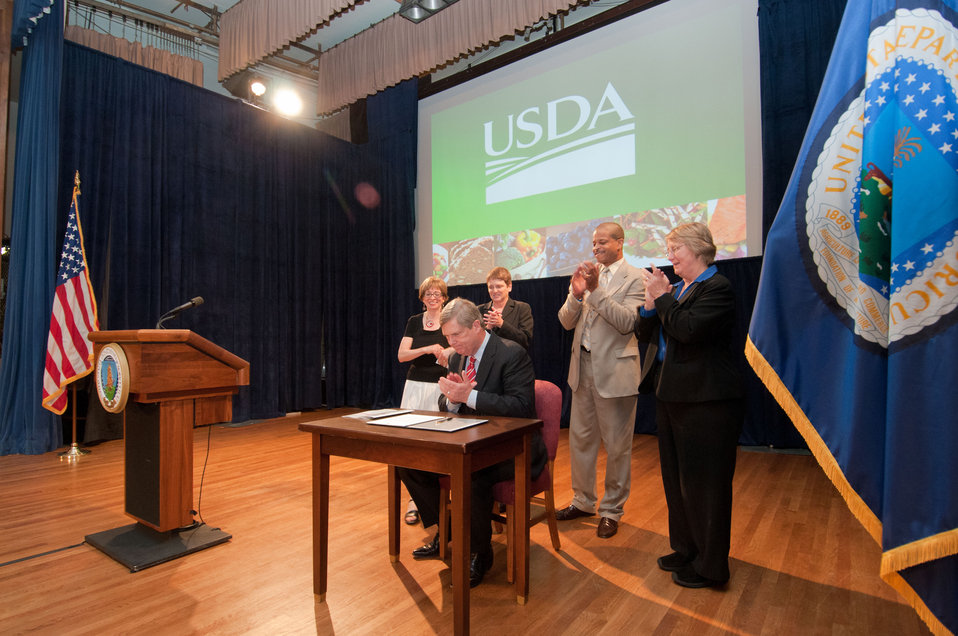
U.S. Department of Agriculture (USDA) Secretary Tom Vilsack made signed the new USDA Civil Rights Policy Statement during the Lesbian, Gay, Bisexual and Transgender (LGBT) Pride Observance Program in the Jefferson Auditorium, Washington, DC on Thursday, June 2, 2011.